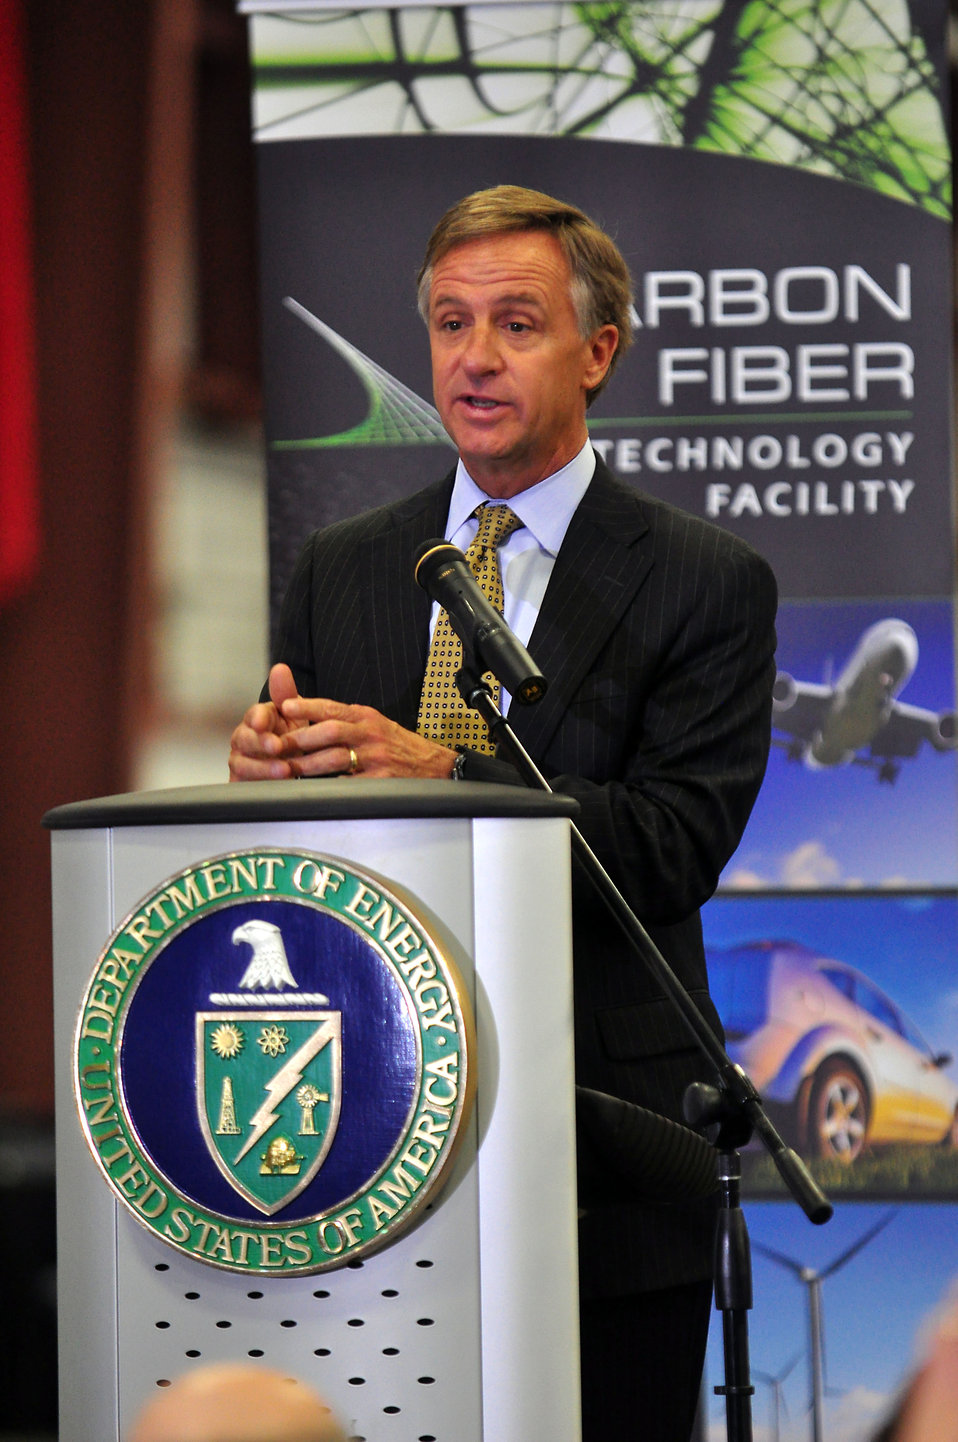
Carbon Fiber Technology Facilty Open House Oak Ridge Tennessee

13-025 DOE photo Lynn Freeny
Governor State of Tennessee Bill Haslam